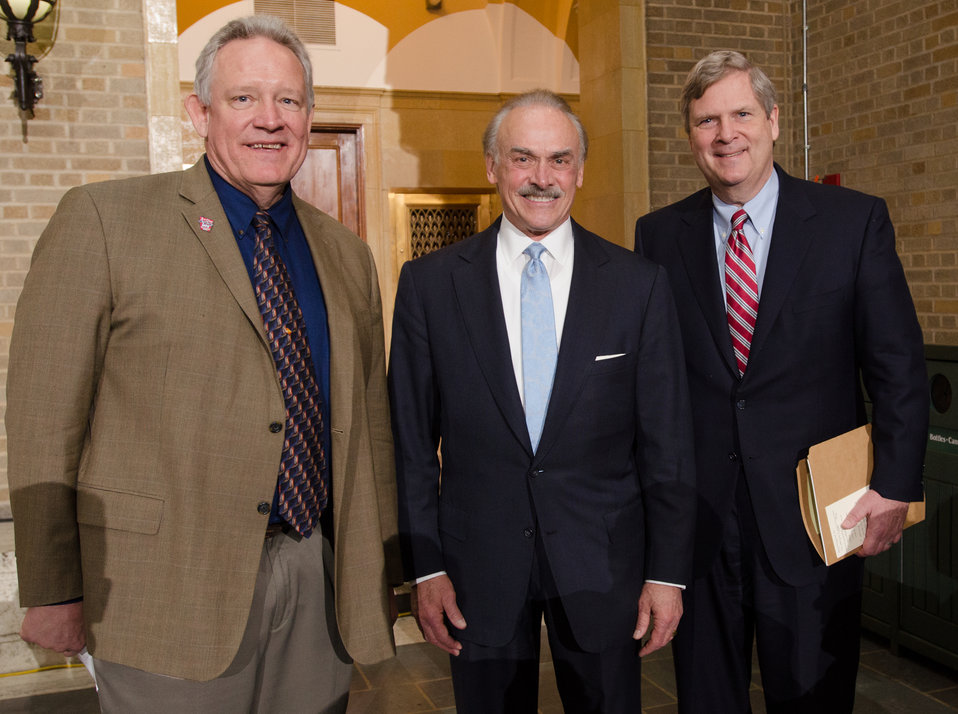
(L to R) Dairy Management, Inc. Board Chair Paul Rovey, keynote speaker, former National Football League Pittsburgh Steelers halfback Robert Patrick 'Rocky' Bleier, and Agriculture Secretary Tom Vilsack attend a luncheon with stakeholders from the dairy producers industry, in the Whitten Building Patio, Washington, D.C. on Tuesday, Feb. 26, 2013.